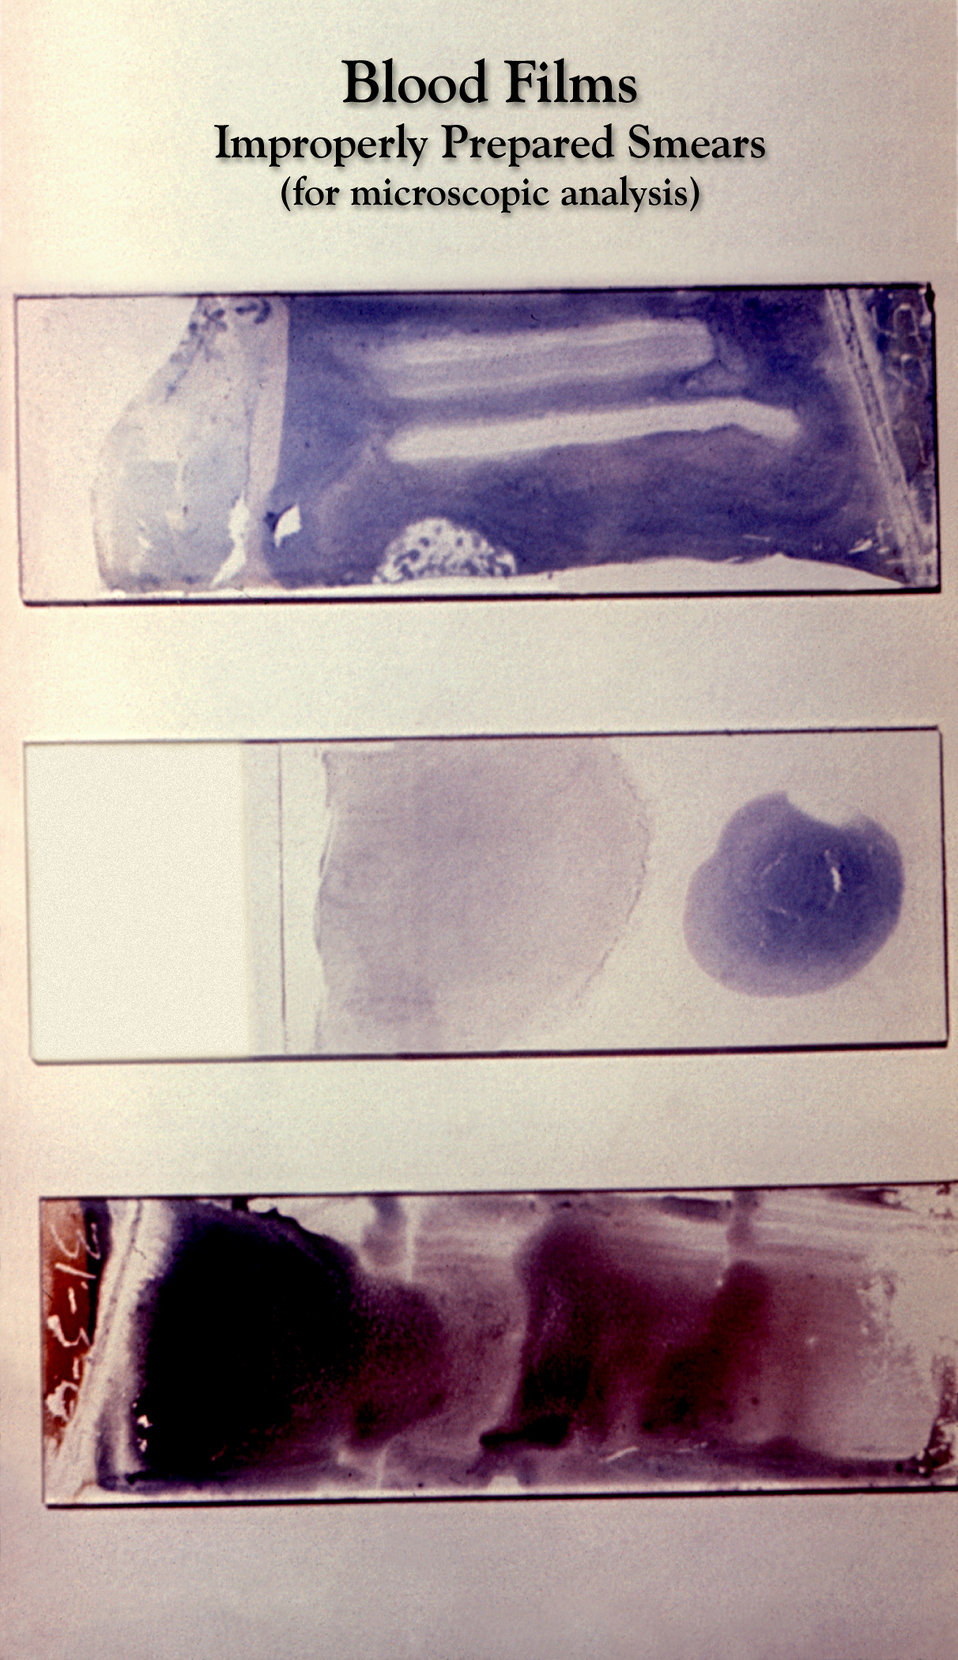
Poor film preparation technique yielded unfavorable results in these Giemsa stained slide specimens.